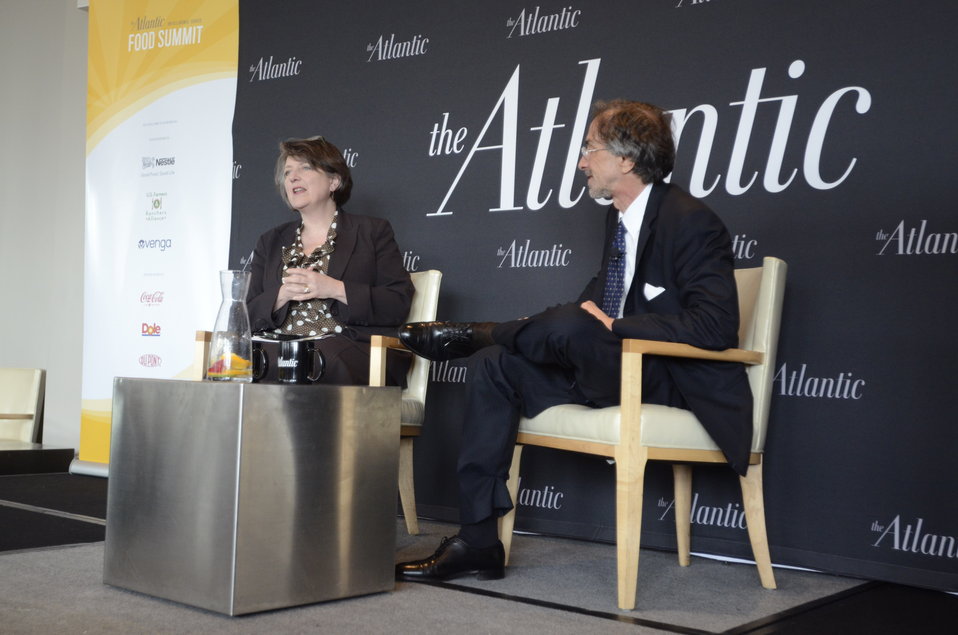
The Atlantic Senior Editor Corby Kummer interviews Agriculture Deputy Secretary Kathleen Merrigan at the 3rd Annual Food Summit held at the W Hotel in Washington, D.C. on Thursday, May 24, 2012. The Food Summit event includes interviews, panel discussions and symposia with leading authorities on issues related to food, food security, and nutrition.